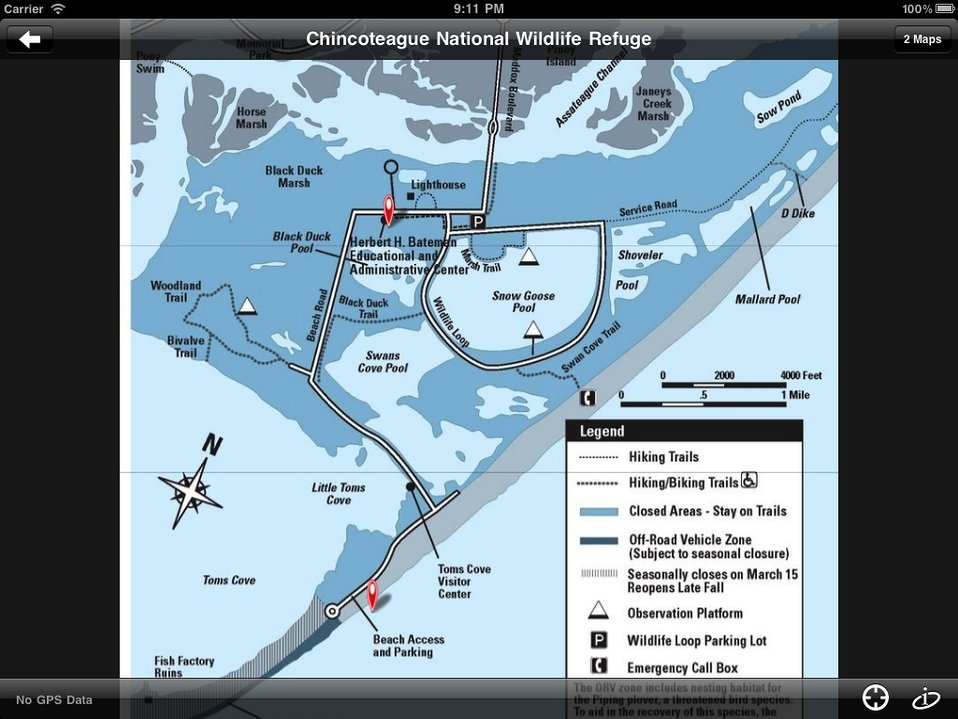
Chincoteague Refuge trail map

Chincoteague National Wildlife Refuge trail map that smartphone users can see on MyRefuge app